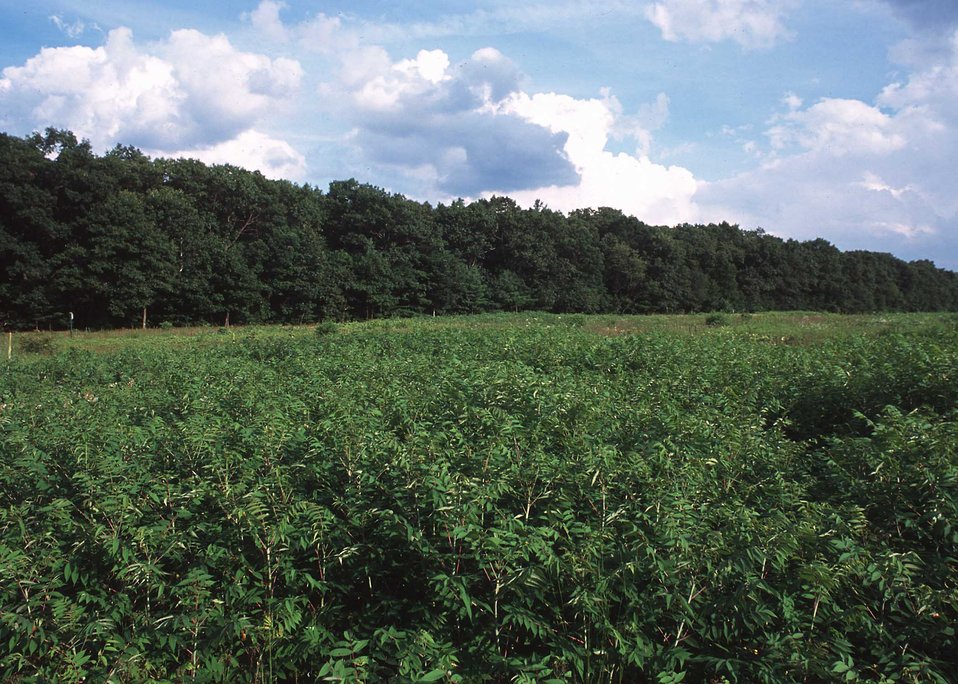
Early successional habitat restoration project in Hartford County.